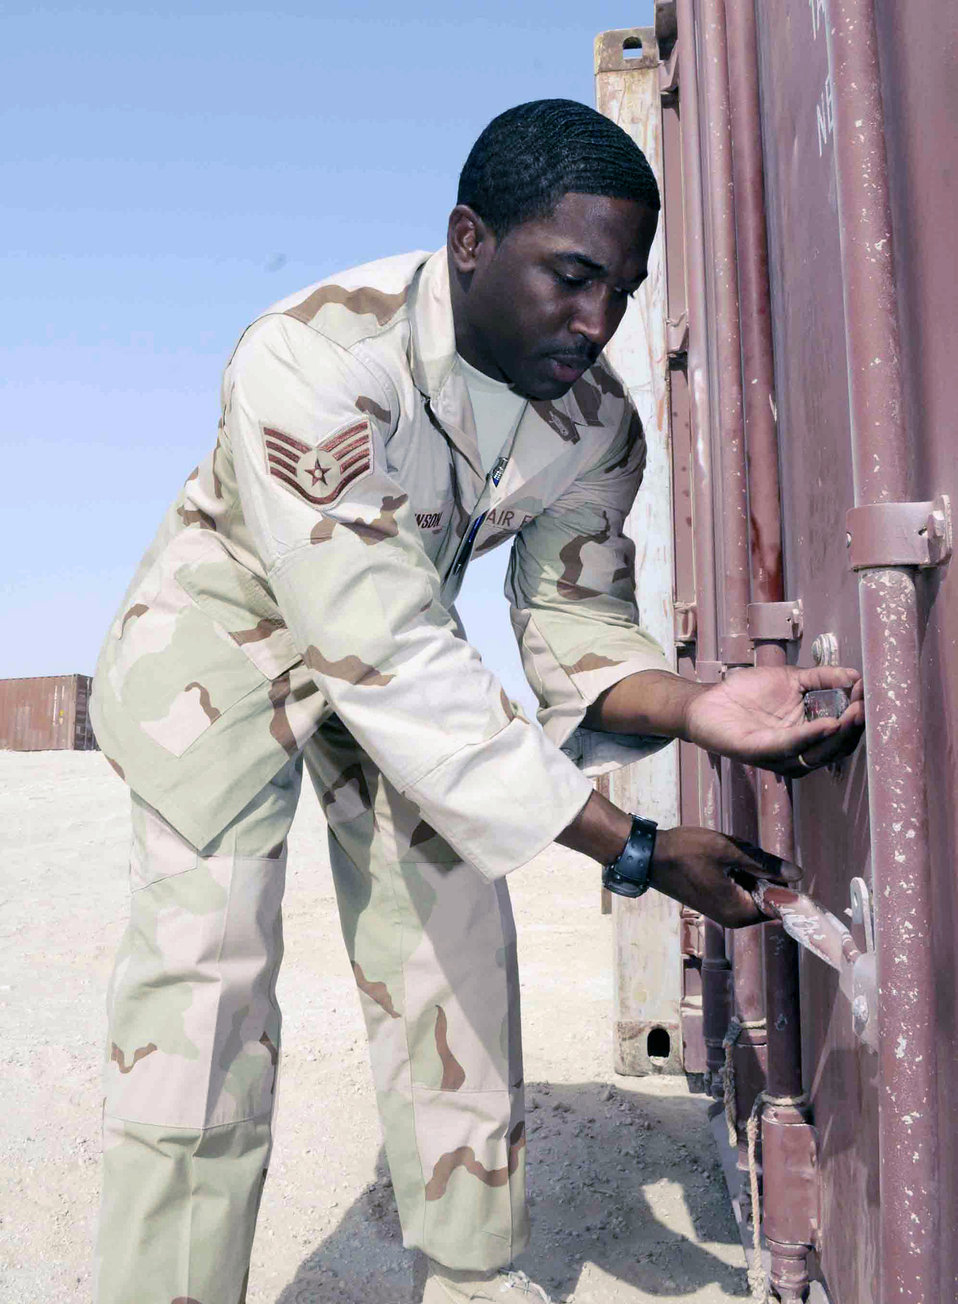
Logistics Readiness Squadron

Staff Sgt. Maurice Johnson opens a storage container to ensure it is ready for transport at a Southwest Asia air base April 24. The 379th ELRS has removed more than 500 storage containers in less than 60 days. Sergeant Johnson is assigned to the 379th Expeditionary Logistics Readiness Squadron.